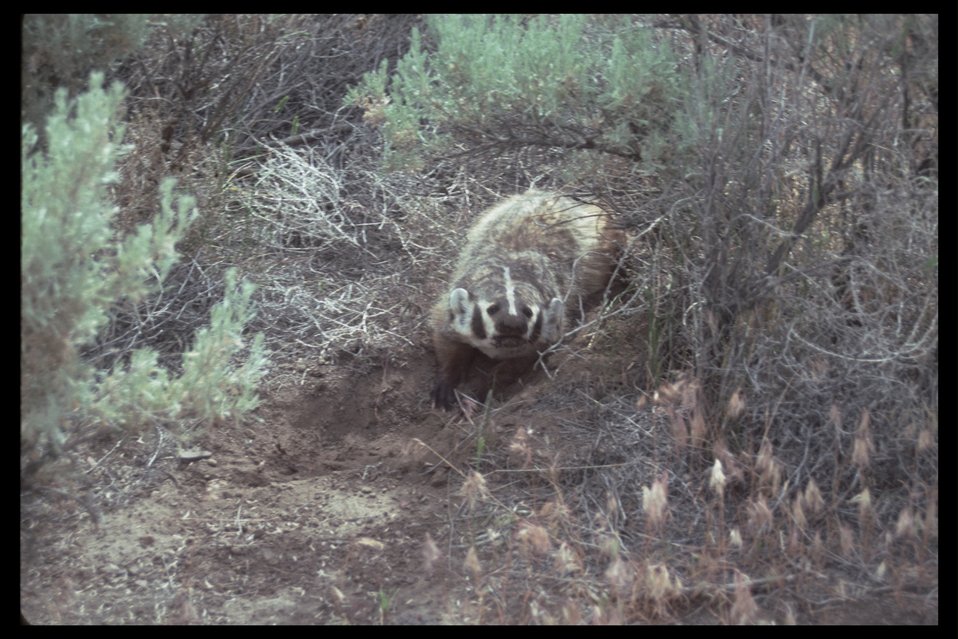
A badger at West Peak WSA. (WSA 2-72J)